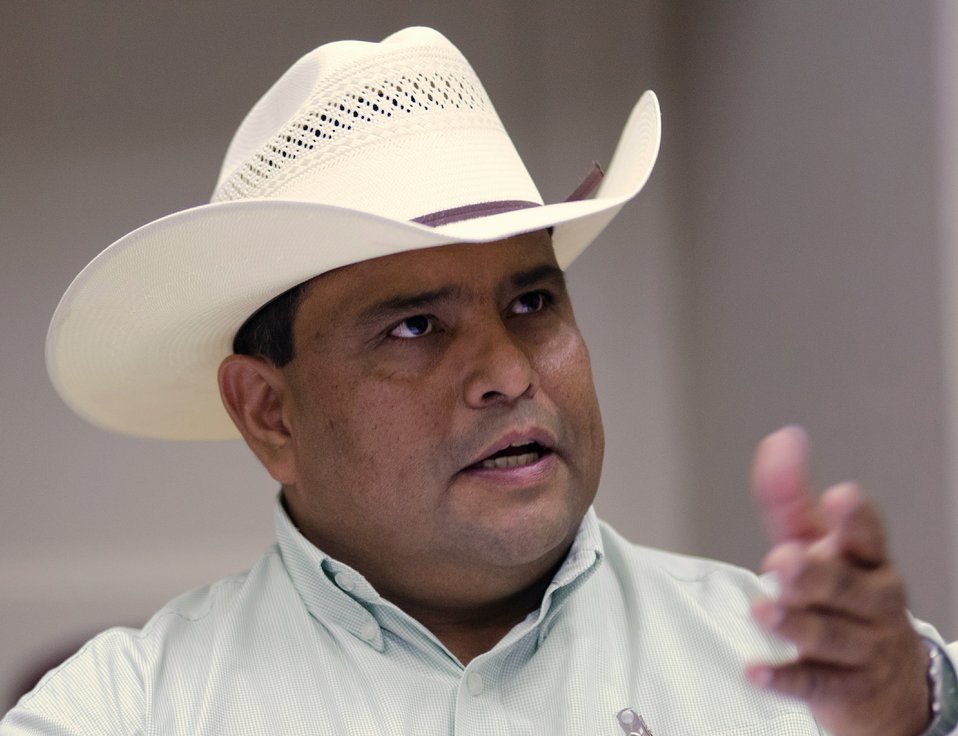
Natural Resources/Range Manager Mark Wadsworth of the Shoshone-Bannock Tribes, in Blackfoot, Idaho, during the first administrative/training meeting of the U.S. Department of Agriculture's (USDA) Council for Native American Farming and Ranching (CNAFR) is held on Monday, Aug. 13, 2012 at the USDA headquarters Whitten Building, in Washington, D.C. CNAFR was created to advise the Secretary on ways to eliminate barriers to participation for Native American Farmers and Ranchers in USDA programs. The Council was established as part of the Keepseagle settlement, and is conducted under the oversight of USDA's Office of Tribal Relations, which is part of the Office of the Secretary of Agriculture. The Director of Tribal Relations Joanna Mounce Stancil serves as Designated Federal Official (DFO) for the Council.